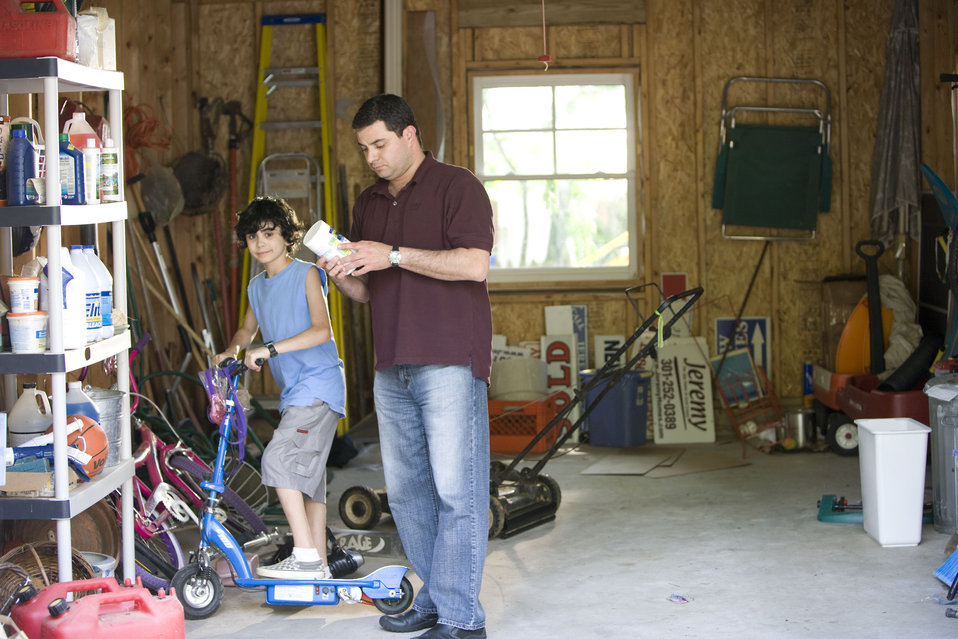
Here we see a father organizing his garage contents, while his son was about to embark on a scooter ride.